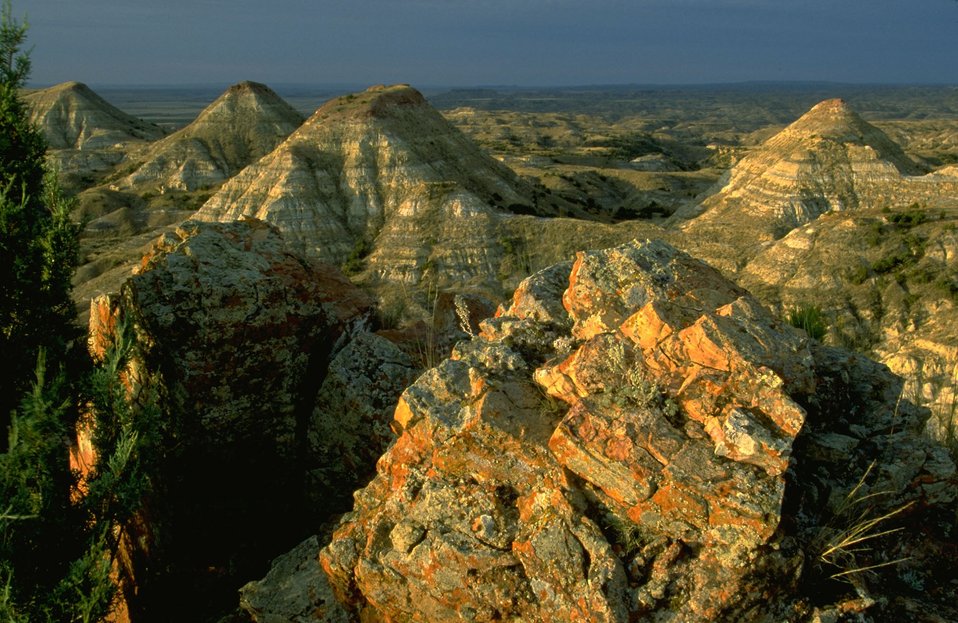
Sun shining on the cliffs in the Terry Badlands - unusual colors